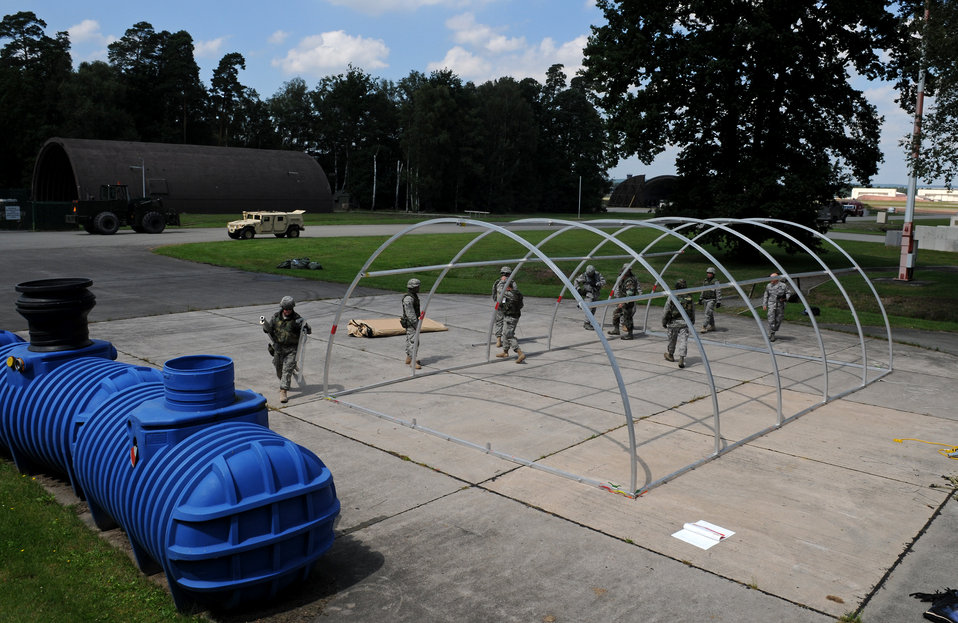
Silver Flag Exercise

Airmen work together to build a small shelter system Aug. 1 during Silver Flag, a week-long training exercise at Ramstein Air Base, Germany. Silver Flag gives participants the basic contingency skills to set up a bed-down operation anywhere in the world.